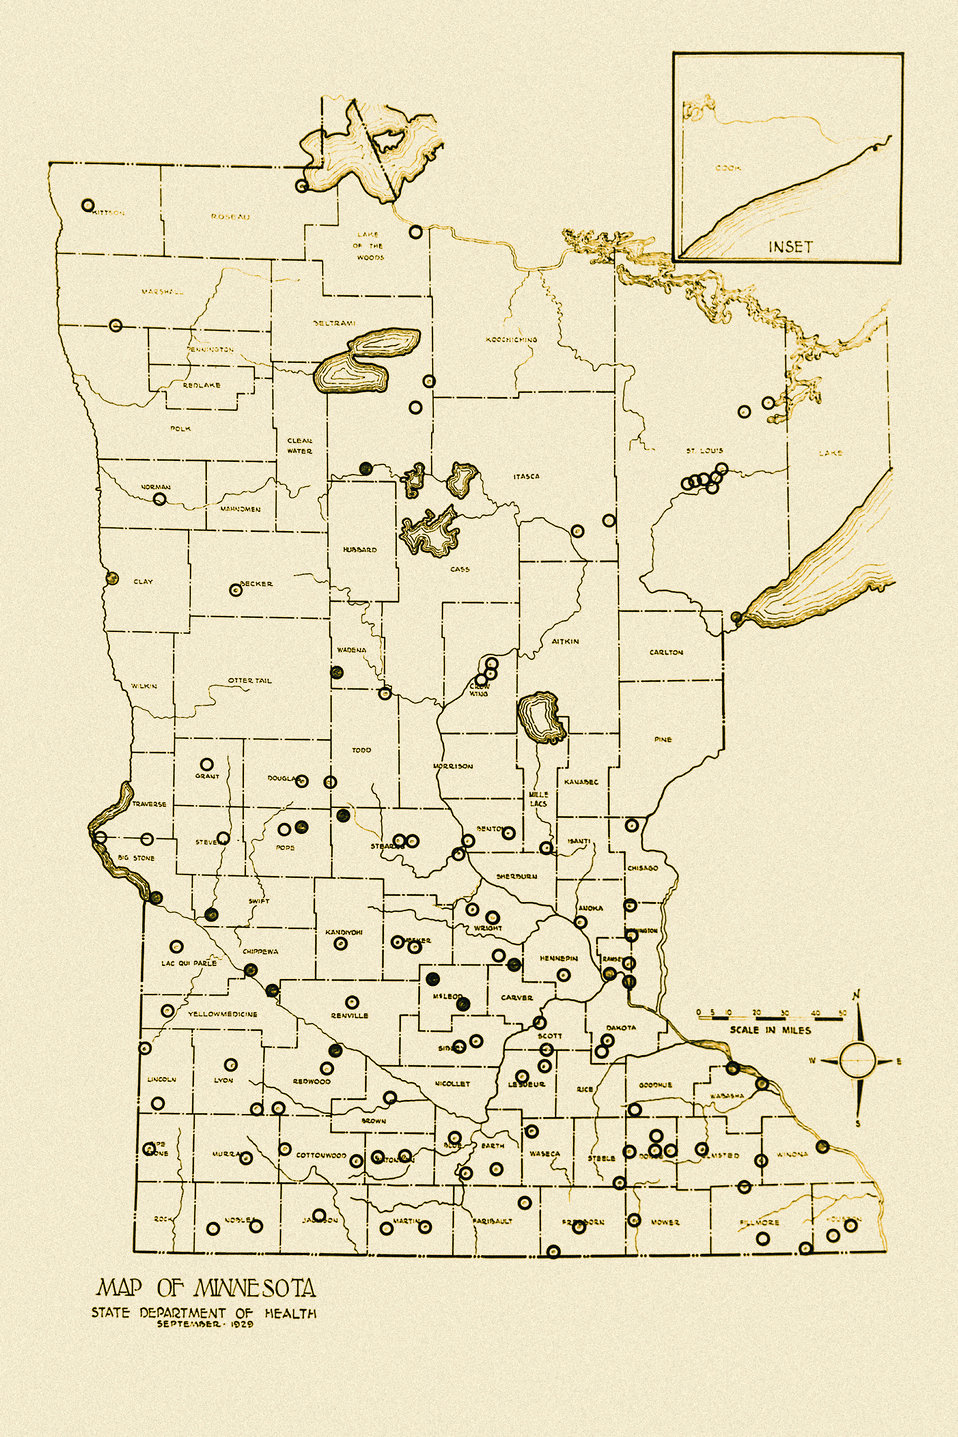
This was a 1935 map of Minnesota, which had been digitally enhanced an colorized, that depicted the location of the state's sewage treatment plants at that time.